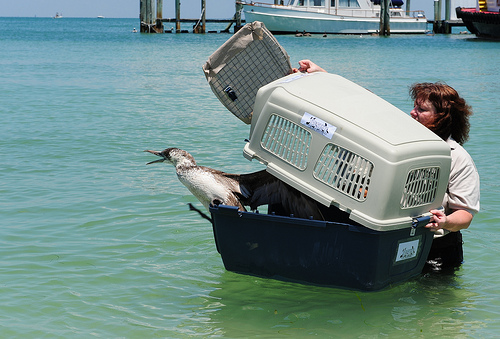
100530-G-2184A-068-Bird Release

ST. PETERSBURG, Fla. -- Dr. Sharon Taylor and Michael Lusk (not visible) of the U.S. Fish and Wildlife Service release a Northern Gannet at the Egmont Key National Wildlife Refuge near St. Petersburg May 30, 2010. The bird, along with five others, was transported to the Tampa Bay area aboard a Coast Guard HC-144A Ocean Sentry aircraft after being found oiled near Louisiana's coast and cleaned at Fort Jackson, La. U.S. Coast Guard photo by Petty Officer 3rd Class Nick Ameen.